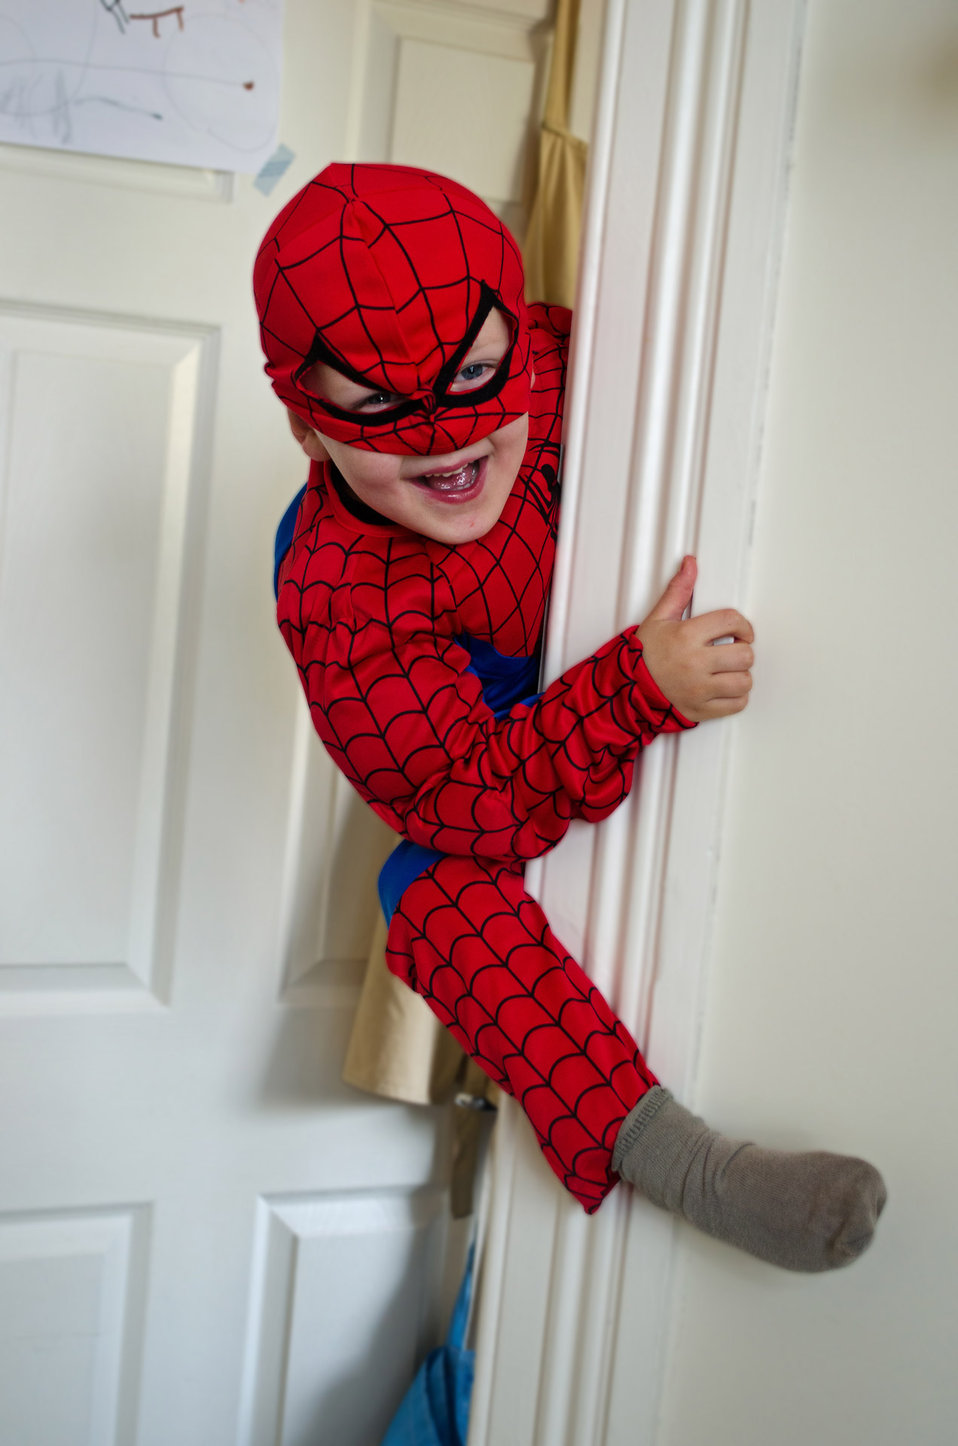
Little spiderman.